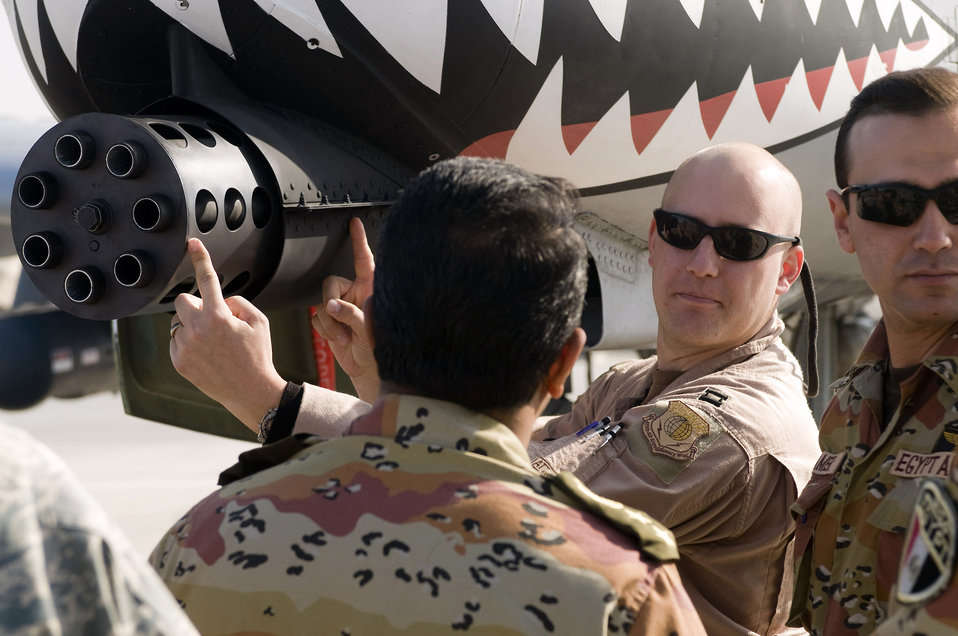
Egyptians learn airpower

Capt. Chris Petek describes the size of a 30mm round compared to the GAU-8/A